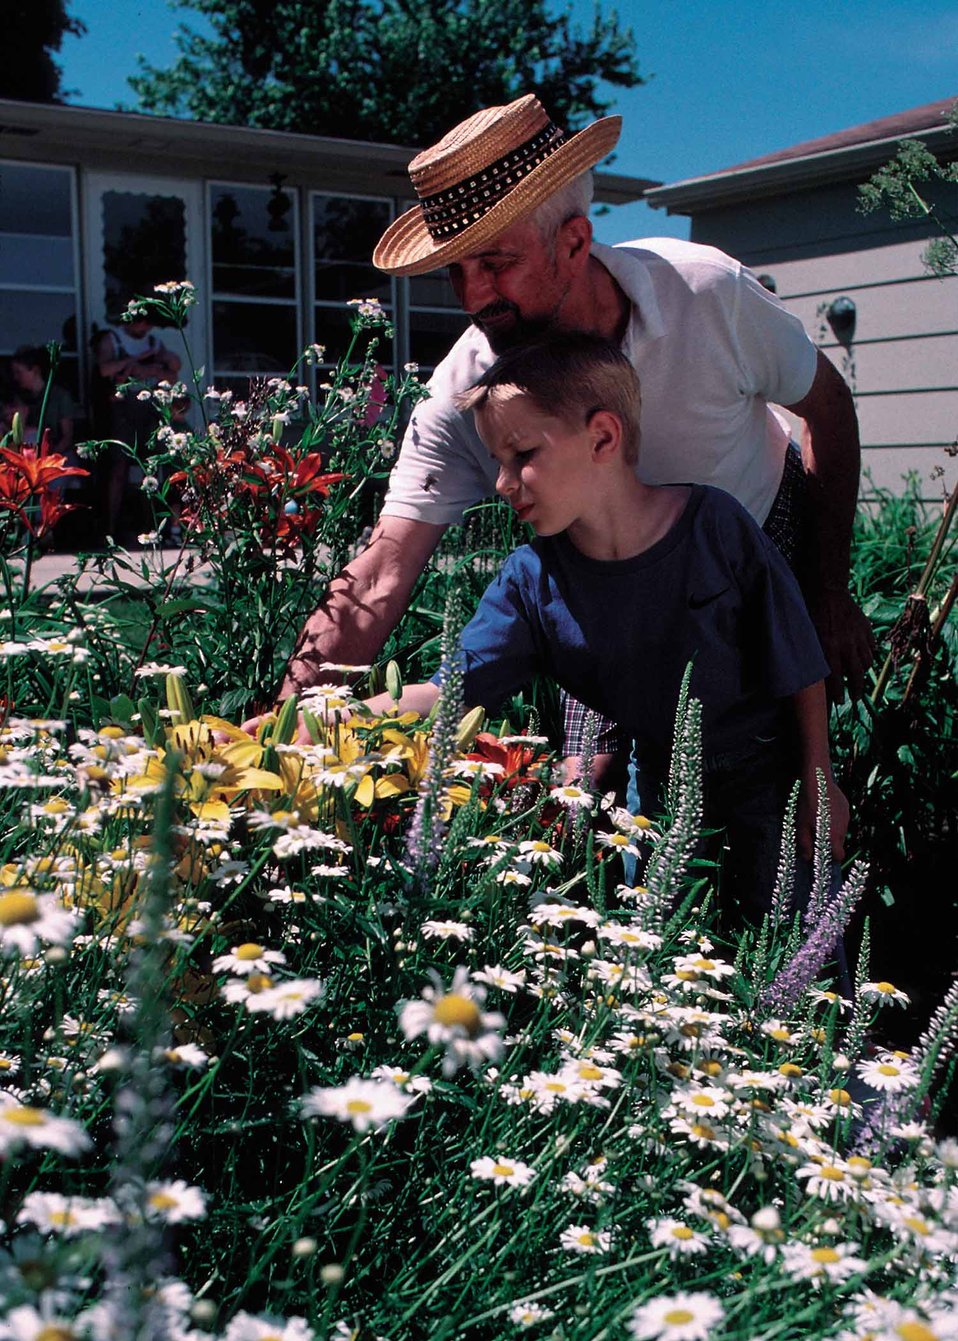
Flowers are part of the backyard conservation scene in a home in Urbandale, Iowa.